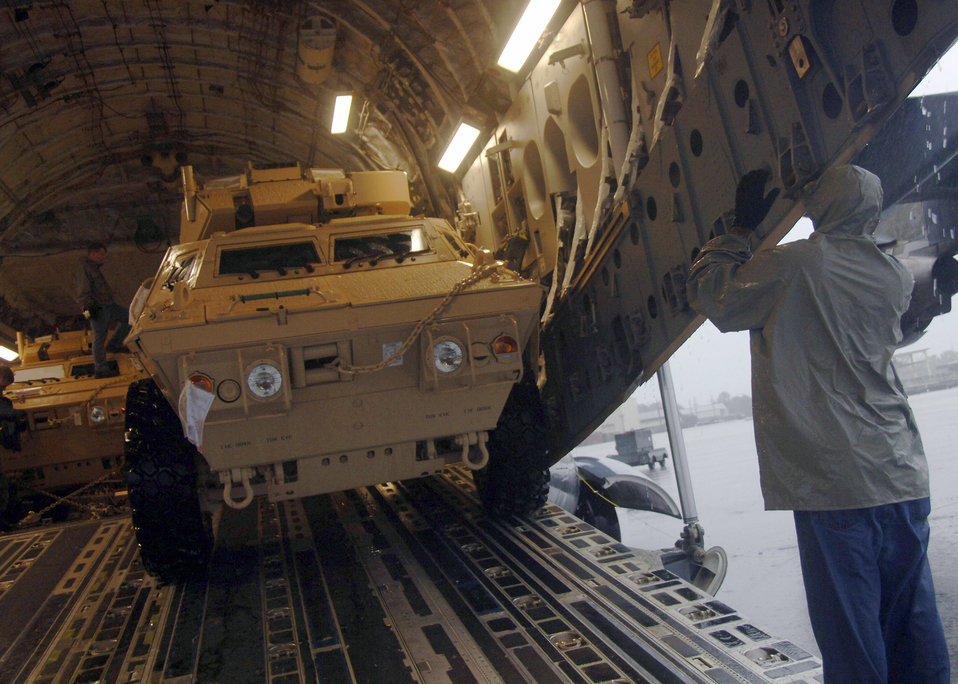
Charleston officials ship vehicles to support warfighters

Corrie Frazier guides an armored security vehicle toward the back of a C-17 on the Charleston AFB flightline Oct. 24. The Armored Security Vehicle is a four-wheel-drive vehicle that provides ballistic protection to warfighters who are using them against various threats. Mr. Frazier is with the 437th Aerial Port Squadron.